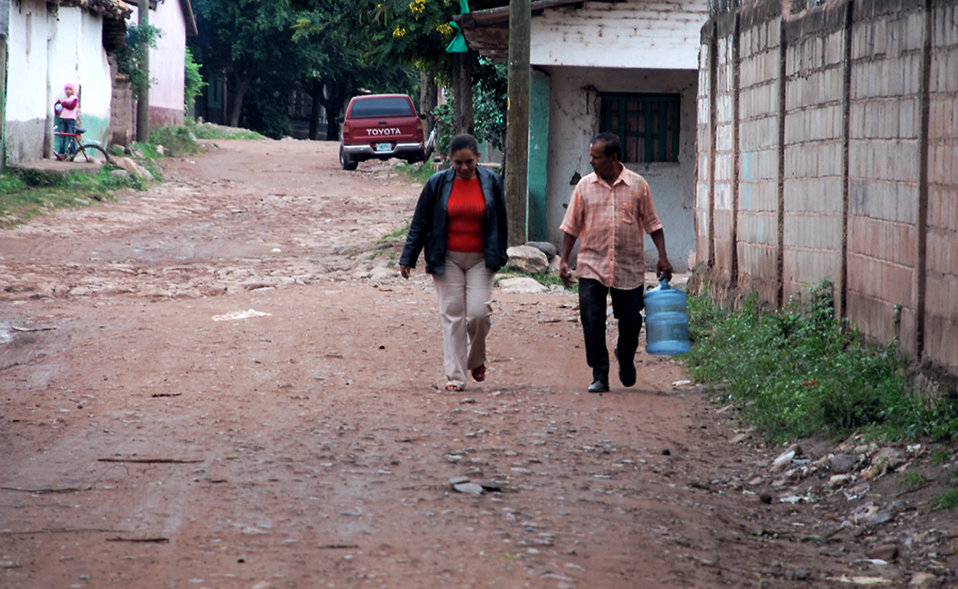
Servicemembers provide water to flood-affected community

A family walks down the road to get the free purified water provided by Joint Task Force-Bravo members Oct. 29 at La Paz, Honduras. Before JTF-Bravo members offered to purify the well water affected by the flooding, the community had to have water trucked in at great expense to them.